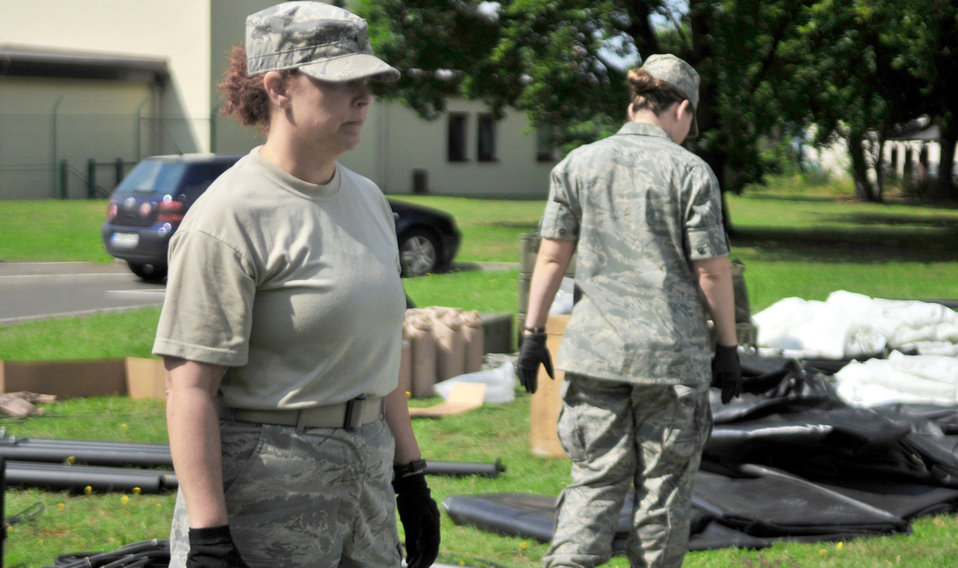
Ramstein AB medics

Maj. Sharon Franklin directs her team during set up of their training site Aug. 2, 2010, at Ramstein Air Base, Germany. Major Franklin and her group of individuals ranging from nurses, medical technicians, communications specialist and medical administrative technicians man Ramstein AB's Mobile Aeromedical Staging Facility, one of only three in the European Command. Major Franklin is the commander of Ramstein AB's MASF.